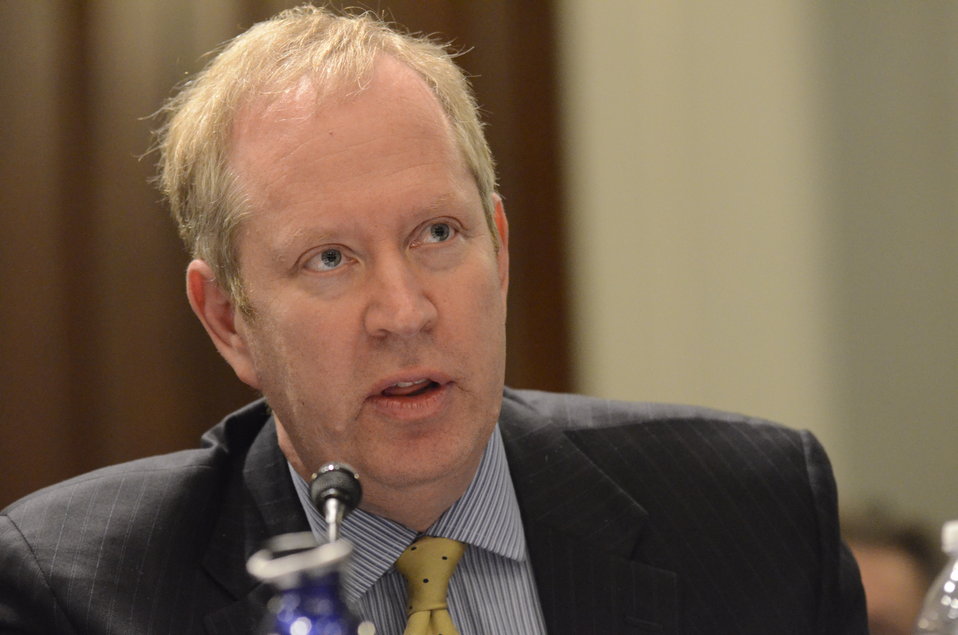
Dinsmore & Shohl LLP partner Mr. Reed D. Rubinstein testifies on Retailers & Entertainers Lacey Implementation & Enforcement Fairness Act & Freedom from Over-Criminalization & Unjust Seizures Act at the Longworth House Office Building in Washington, D.C. on Tuesday, May 8, 2012.